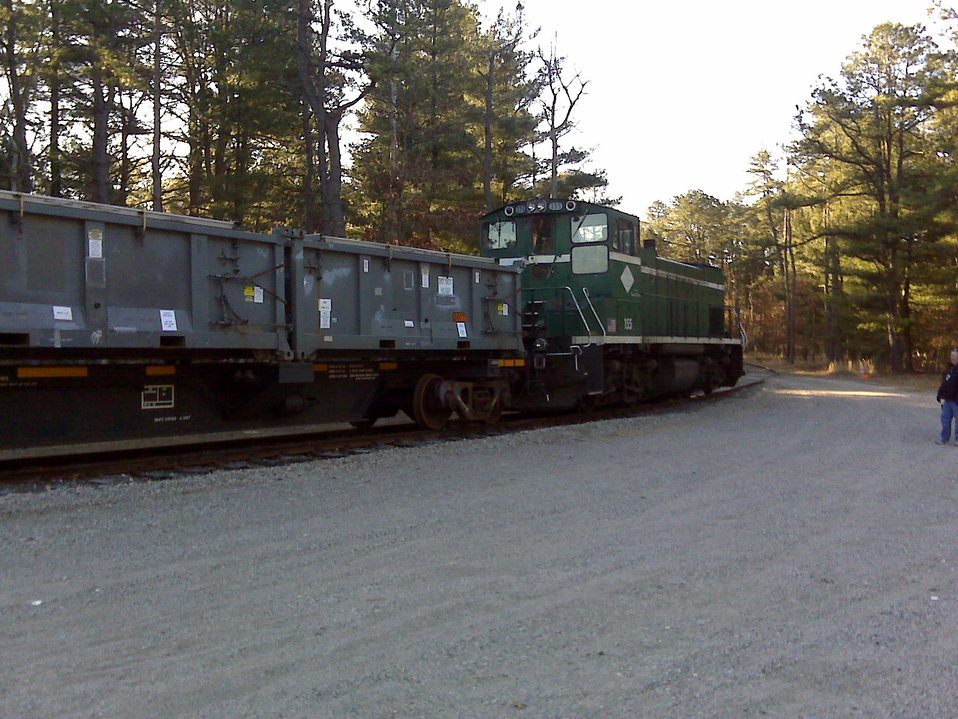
Shipment of Waste from the Waste Transfer Pipe Removal Project